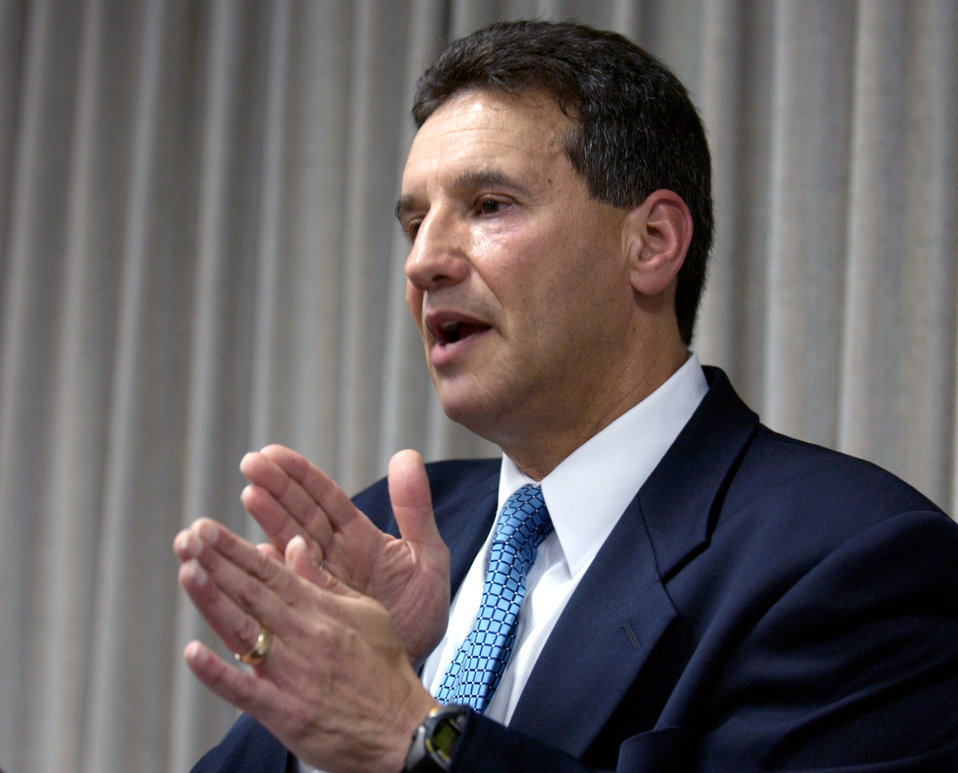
Sambur

WASHINGTON -- Dr. Marvin R. Sambur, assistant secretary of the Air Force for acquisition, talks to reporters at the Pentagon on July 14 about the Air Force's plan to lease 767As from the Boeing Corporation. The lease delivers 100 aircraft to the Air Force five years earlier than under traditional procurement plans.